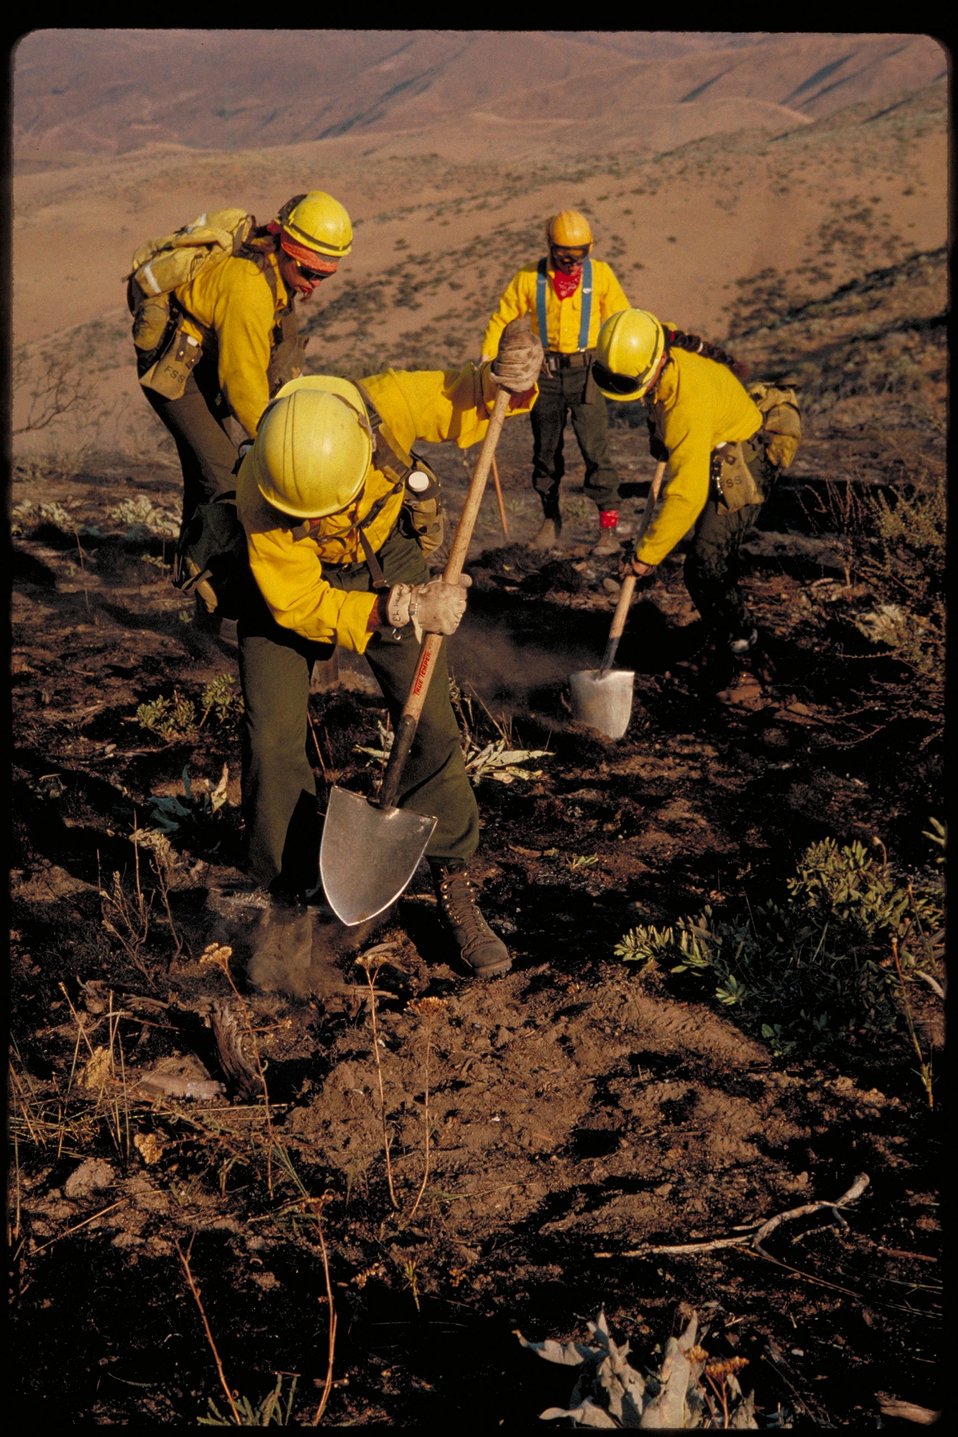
Shovel Crew - arson Foothills Boise Front Four Rivers Field Office LSRD Lower Snake River District